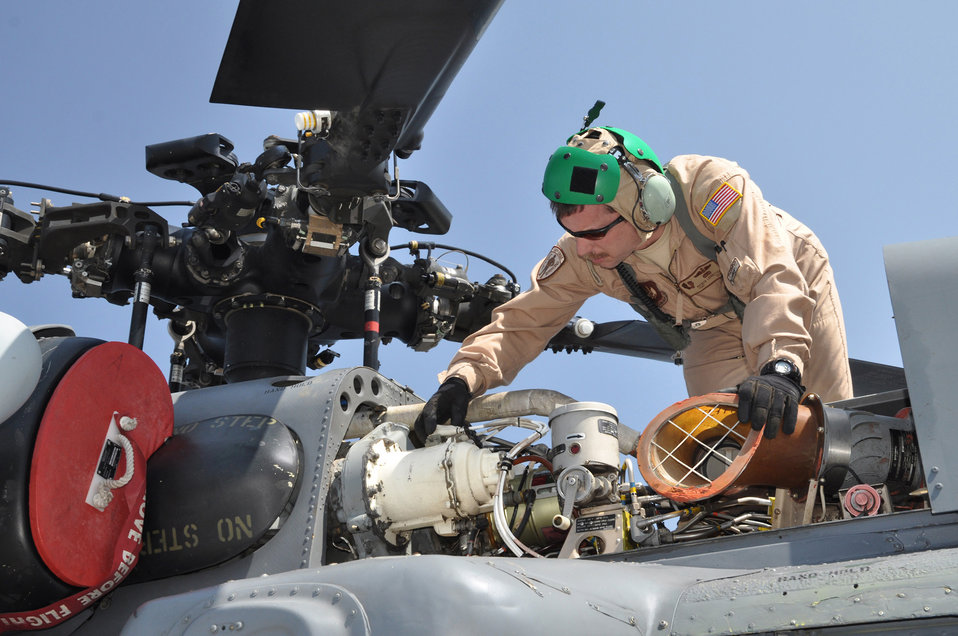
Almost ready

Tech. Sgt. Patrick Ledbetter performs a preflight check on an HH-60G Pave Hawk March 27, 2011, aboard the USS Ponce. Sergeant Ledbetter is assigned to the 56th Rescue Squadron at Royal Air Force Lakenheath, England, and is aboard Ponce to provide combat search and rescue support for Operation Odyssey Dawn.